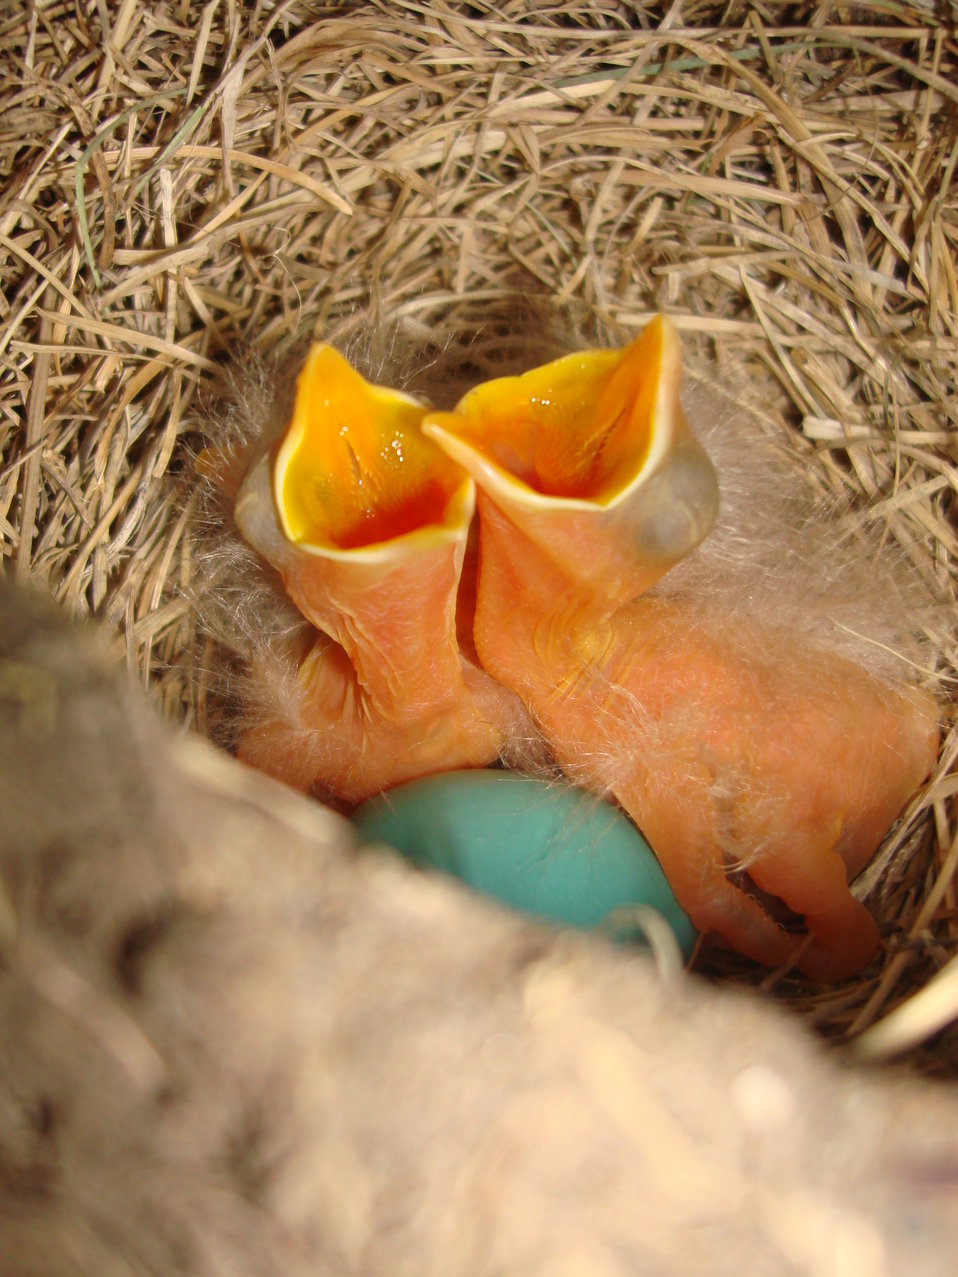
Robin Babies